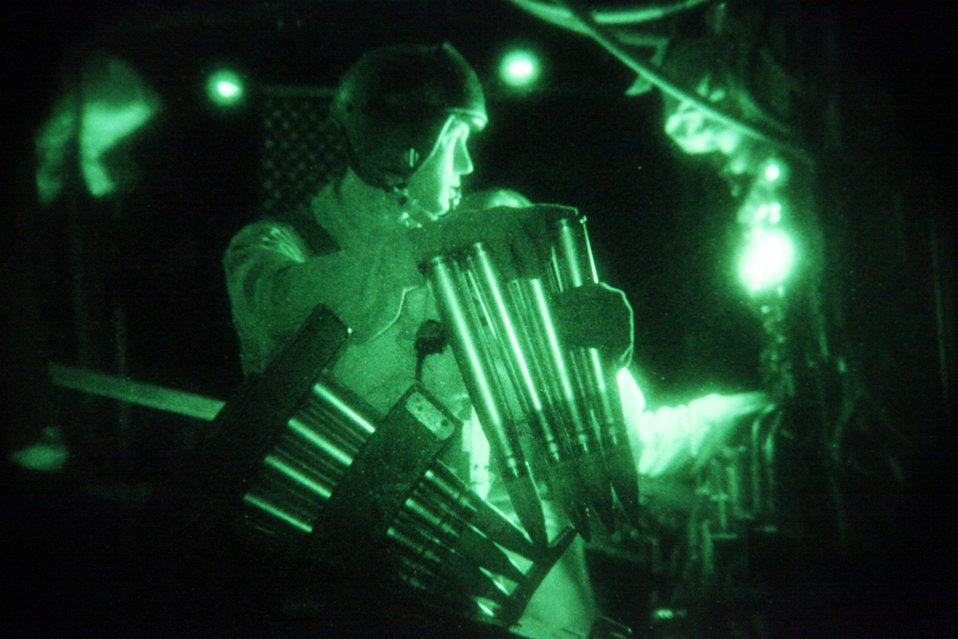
AC-130 crew provides air support

A gunner aboard an AC-130 Gunship loads rounds into a 40 mm cannon March 3, 2010, while supporting ground troops conducting operations in Afghanistan's Parwan province.